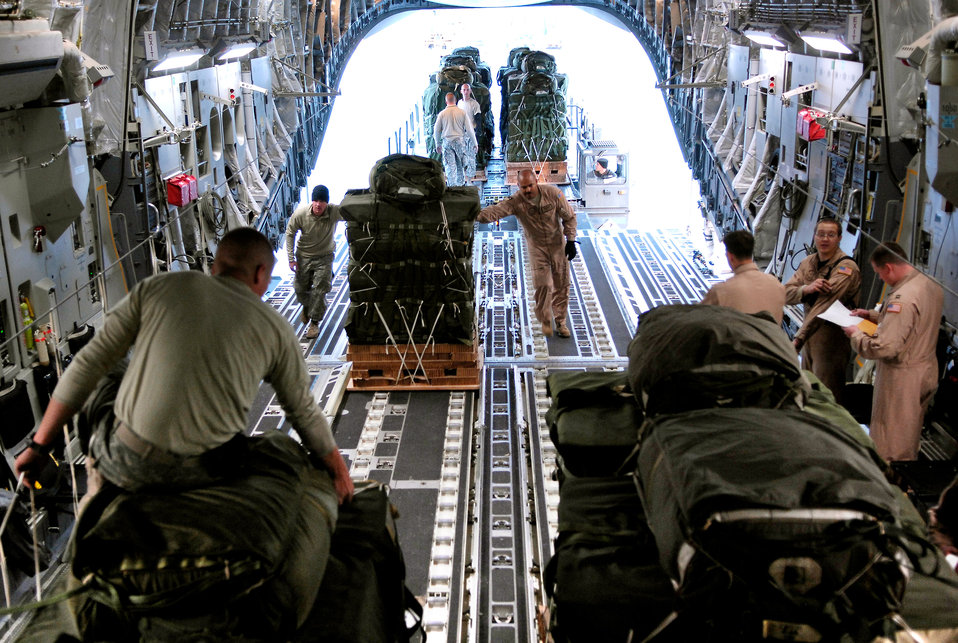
C-17 crews make record airdrop

Army Spc. Joshua Black (left) attaches one of 62 parachute ripcords to the static line of a C-17 Globemaster III while crew members continue to load bundles Oct. 11 at Bagram Air Base, Afghanistan. The 62 cargo bundles were dropped from two C-17s to a drop zone in Afghanistan. This was the first time a combat cargo drop of this magnitude has taken place from two C-17s in formation over one drop zone. Specialist Black is a rigger with the 11th Quartermaster Company, 82nd Airborne.